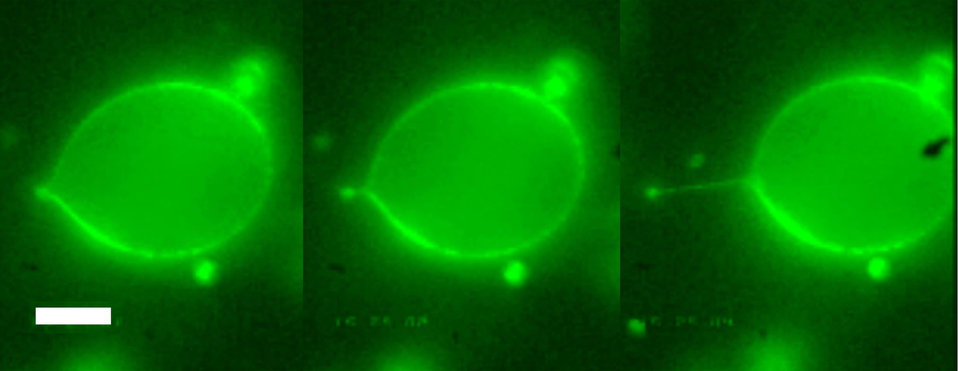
Stable Polymer Nanotubes May Have a Biotech Future

This sequence of images taken at NIST shows the creation of a nanotube as a highly focused infrared laser tugs on a polymer membrane that has been colored with a fluorescent dye. The white scale bar indicates 10 micrometers. The video shows the creation of a polymer nanotube. A highly focused infrared laser tugs on a polymer membrane and a long, thin tube is formed.